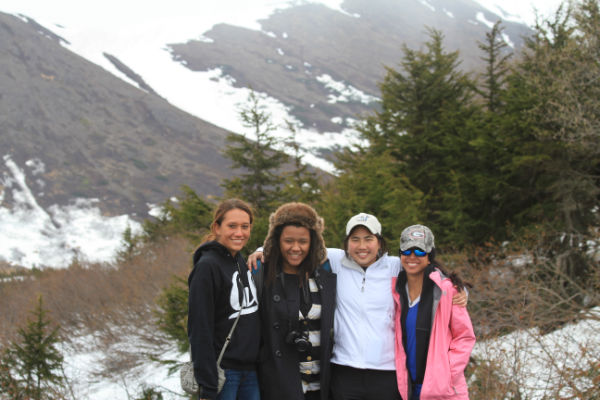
2012-Alaska Region-Work(08)

Alaska Career Discovery Internship Program is partnership with the Student Conservation Association to provide a 12 week internship to college freshman and sophomores to discover careers with the U.S. Fish and Wildlife Service.

Once in Alaska interns convened in Anchorage to acclimatize to the 'Far North' and receive more training including: bear safety, aviation safety, and more.